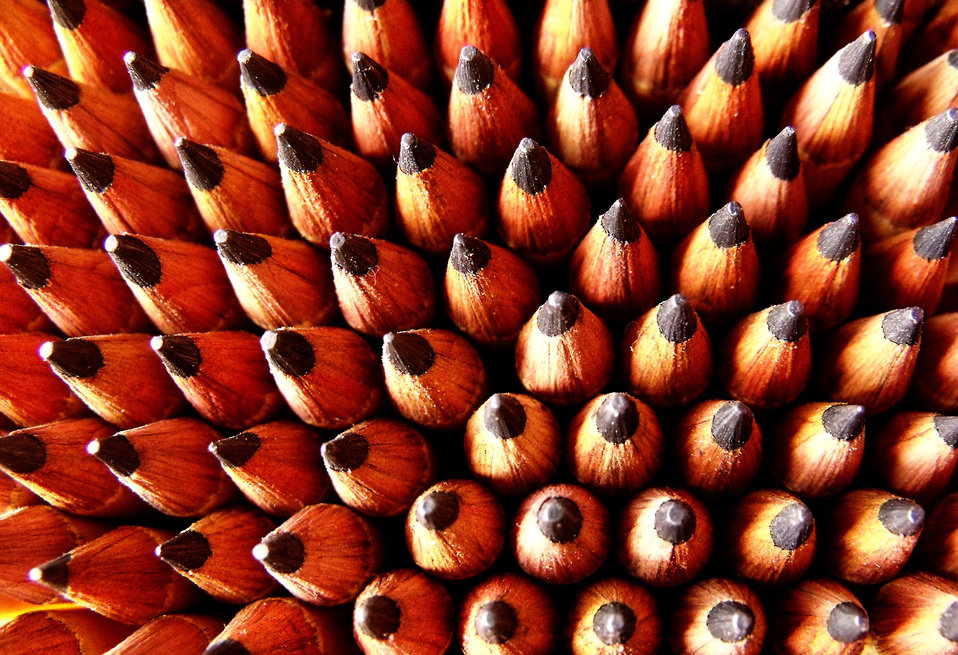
Get to the point

Closeup of pencils.